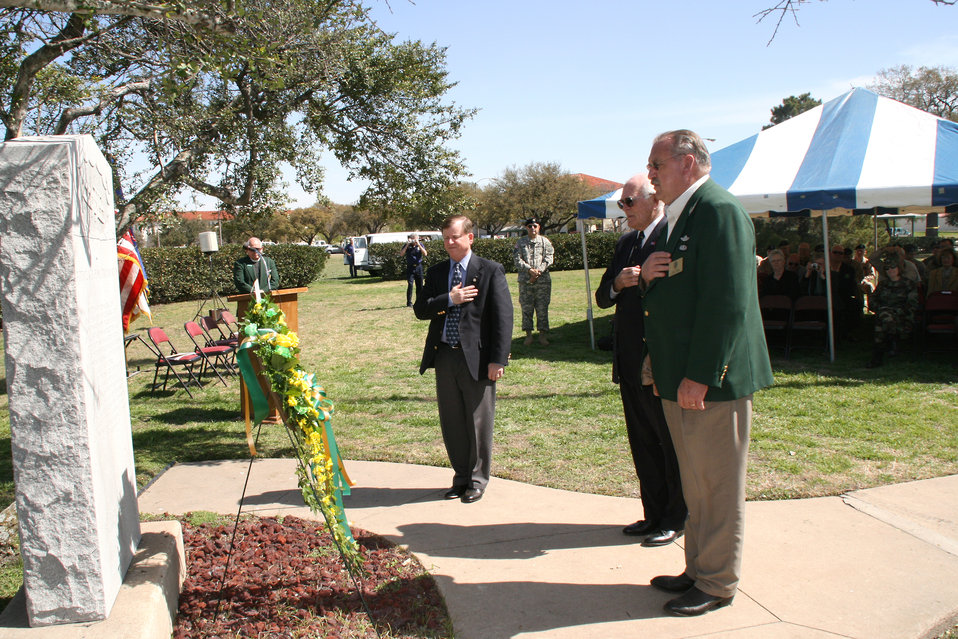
Fort Sam commemorates first military flight

Stewart Wyland (left), Oliver R. Crawford and retired Air Force Col. Robert H. Karre place a wreath March 2 at the granite landmark at Fort Sam Houston, Texas, that commemorates the birth of military aviation. The first military aerial flight took place here March 2, 1910.